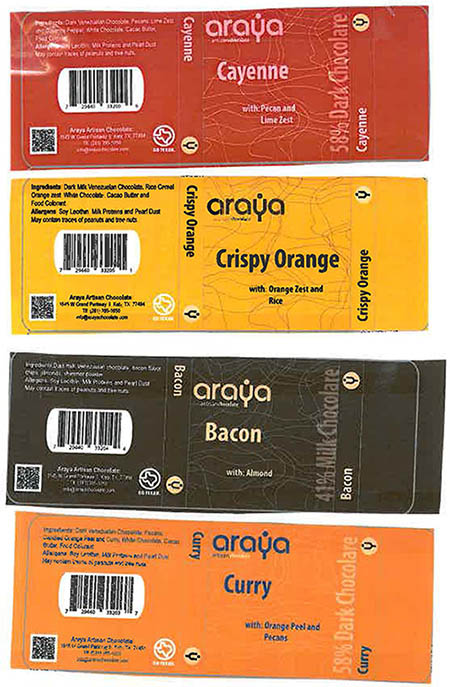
RECALLED – Chocolate Bars, Marshmallows, Dry Fruits, and Chocolate Gift Boxes

January 23, 2014 – Product Recall – Araya Inc. Issues Allergy Alert on Undeclared Tree Nuts, Wheat, Milk and Soy in Their Chocolate Bars, Marshmallows, Dry Fruits and Chocolate Gift Boxes.